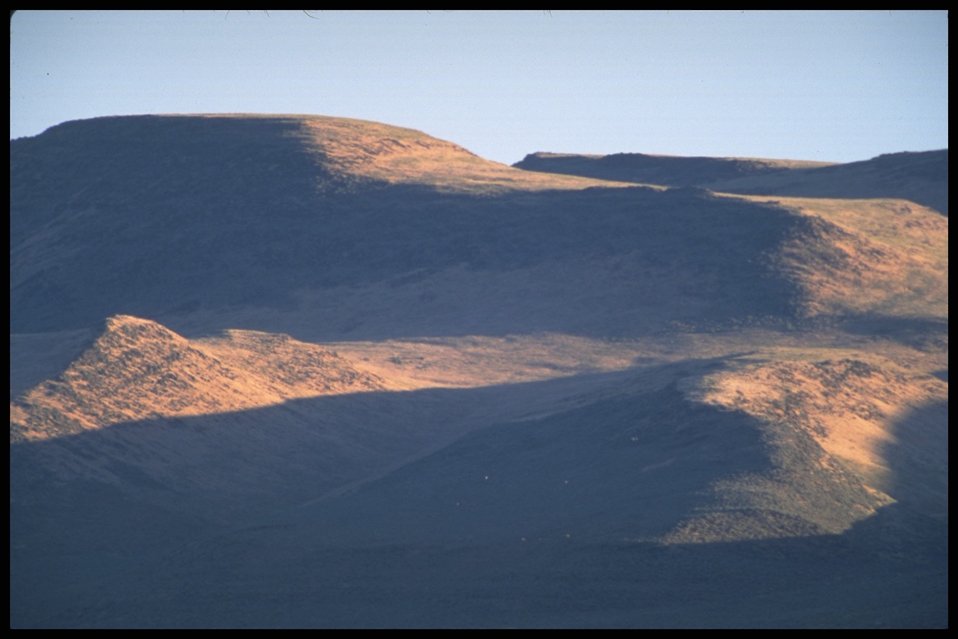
Hills near Abert Rim, Lakeview District.